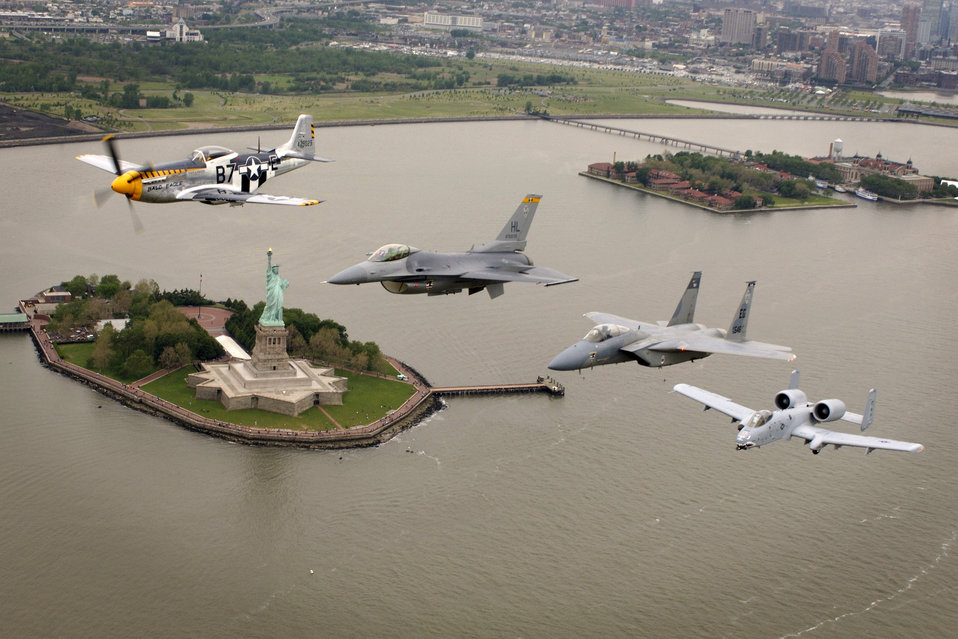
Heritage Flight over New York

A P-51 Mustang, flown by Jim Beasley; an F-16 Fighting Falcon, flown by Maj. Dax Cornelius from Hill Air Force Base, Utah; an F-15 Eagle, flown by Capt. Tony Bierenkoven from Eglin AFB, Fla.; and an A-10 Thunderbolt II, flown by Capt. Jeff Yost of Pope AFB, N.C., fly over the Statue of Liberty on Thursday, May 25, 2006. The